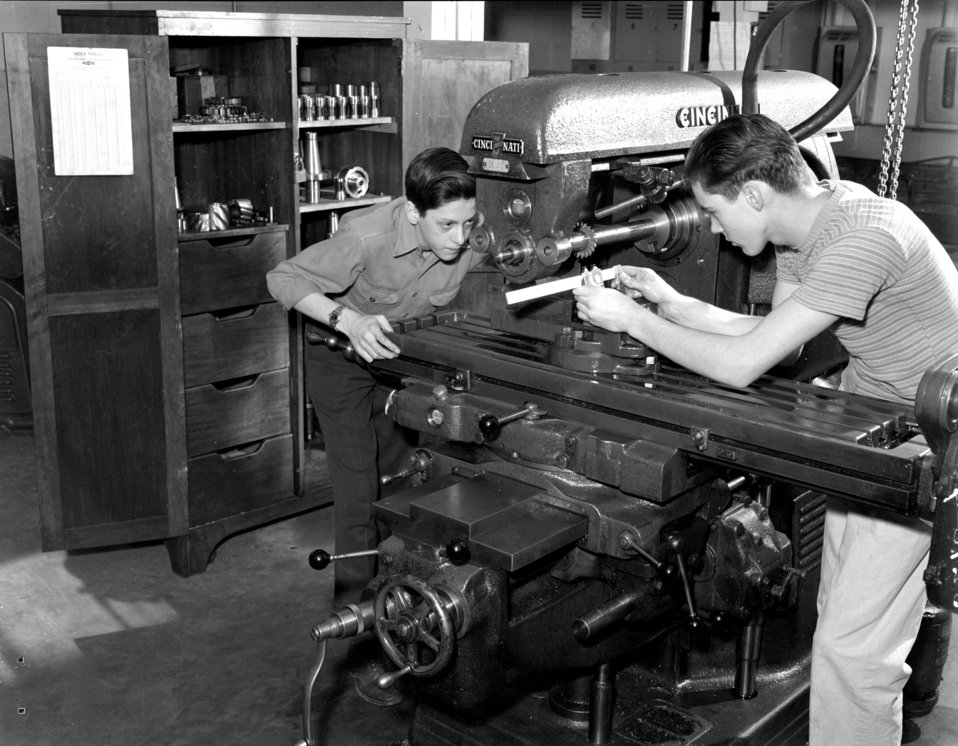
Shop Class Oak Ridge High School 1947

3290-4c DOE photo Ed Westcott 2-12-1947 Oak Ridge Tennessee